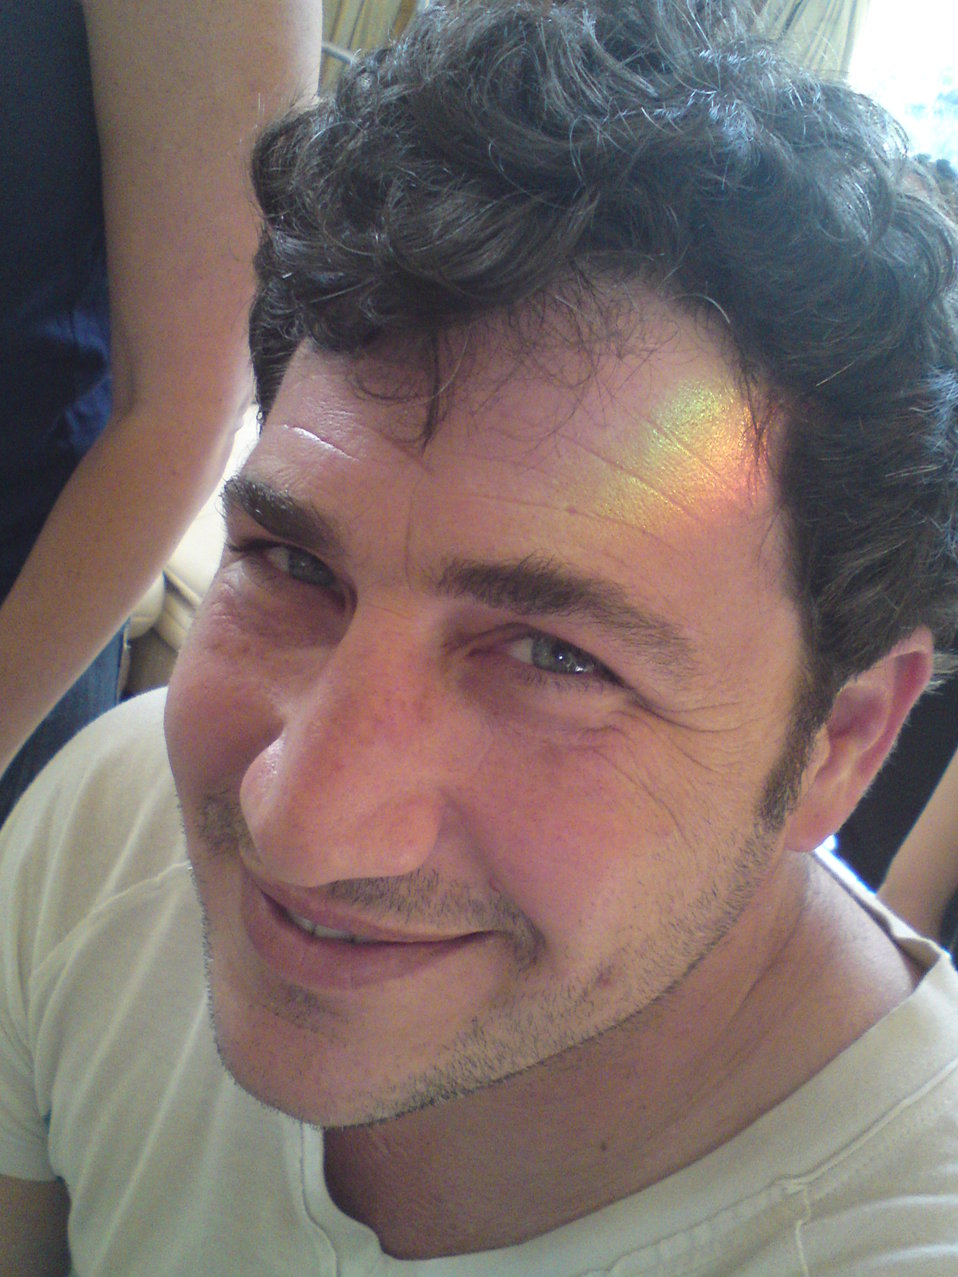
עברית: שי כנות